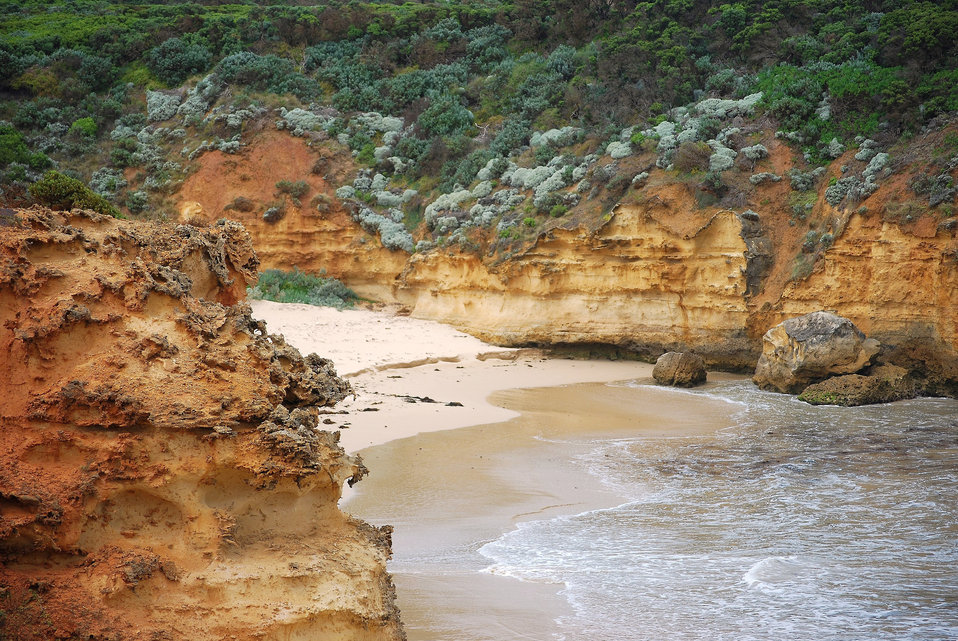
Secluded beach australia

Secluded beach near great ocean road australia.